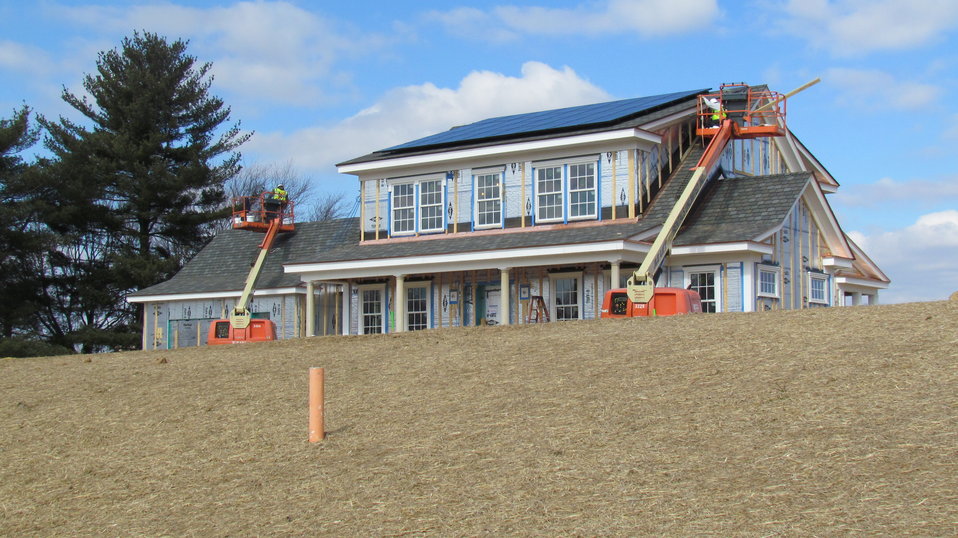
Workmen completing installation of roof shingles on front of NZERTF.